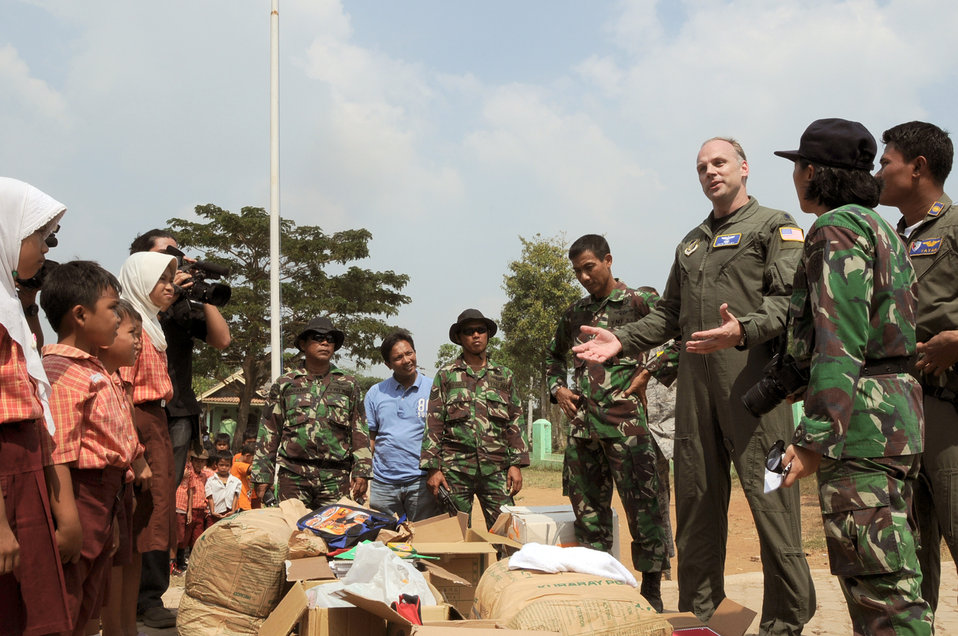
Yokota Airmen deliver school supplies to Indonesian school

Lt. Col. Pete Kelley speaks to students during a goodwill visit to an elementary school in Binguang district, Indonesia, as part of Cope West 11. Colonel Kelley is the commander of the Cope West 11 detachment from Yokota Air Base, Japan.